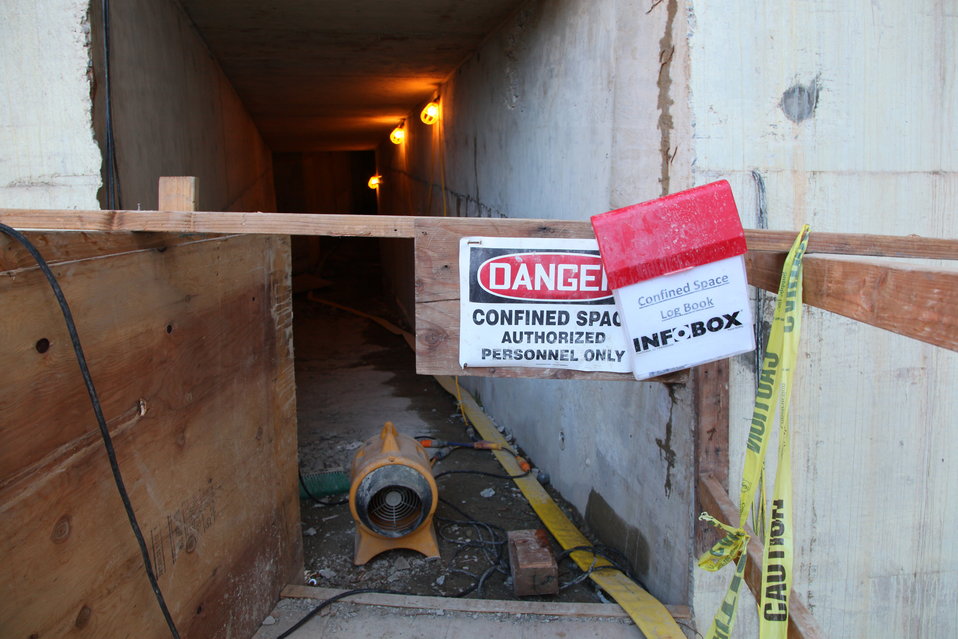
Safety a priority at Folsom Dam project

Contractors for the U.S. Army Corps of Engineers Sacramento District safely navigate - the construction zone at the auxiliary spillway using walkways and scaffolding at the Folsom Dam in Folsom, Calif., Sept. 19, 2012. Safety at the job site is a number one priority; equipment and personal safety are a requirement. The Sacramento District is building the spillway in cooperation with the U.S. Bureau of Reclamation, the Central Valley Flood Protection Board, and the Sacramento Area Flood Control Agency to improve the safety of the existing dam and reduce flood risk for the greater Sacramento area.